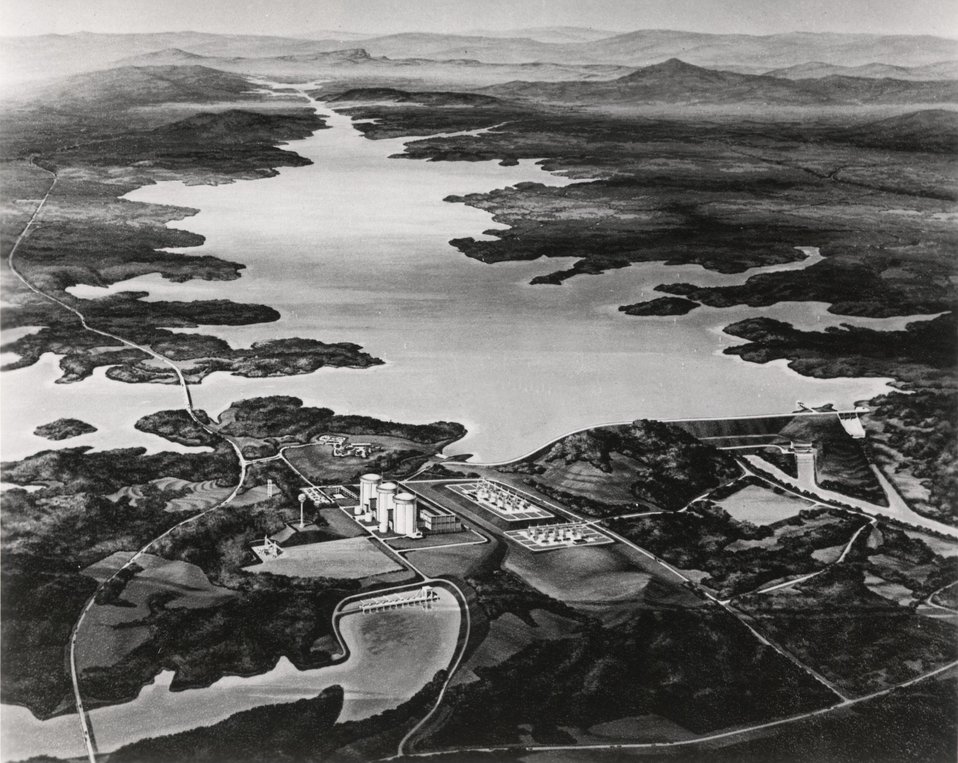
In 1971, some 841 Megawatts of electricity will flow from the first in a trio of similar pressurized water reactors (center left on sketch) which together will comprise the largest nuclear power project yet undertaken by a private utility in the United States. Circa 1970.